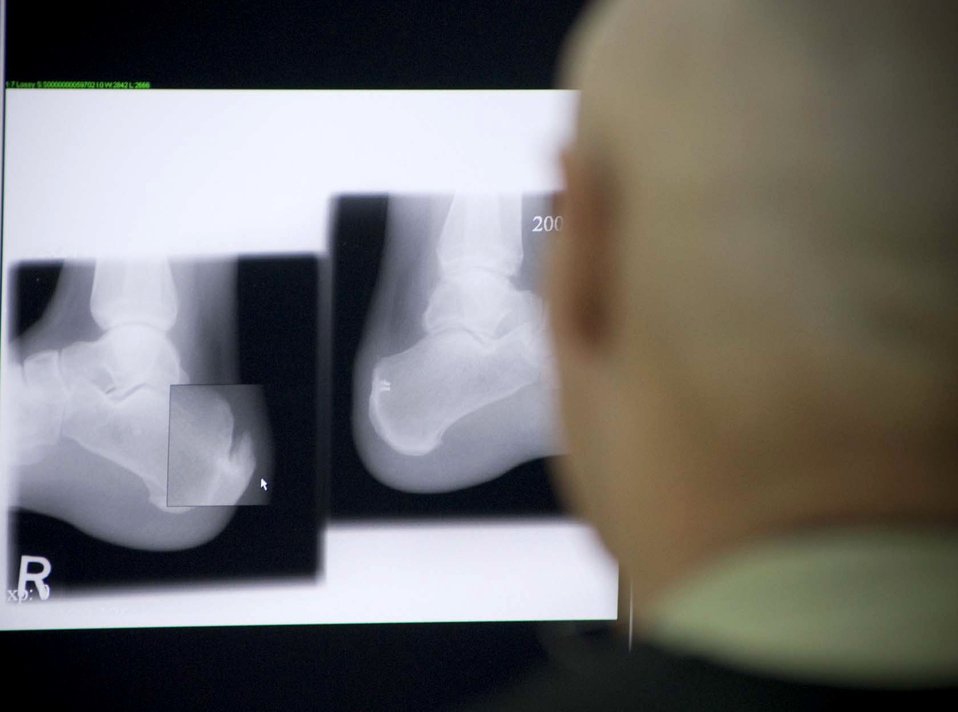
Therapy clinic provides magic touch to injured

Lt. Col. Gary Sherwood reviews x-rays Oct. 4 at the Air Force Theater Hospital at Balad Air Base, Iraq. Colonel Sherwood is the officer in charge at the 332nd Expeditionary Medical Support Squadron Physical Therapy/Occupational Therapy Clinic.